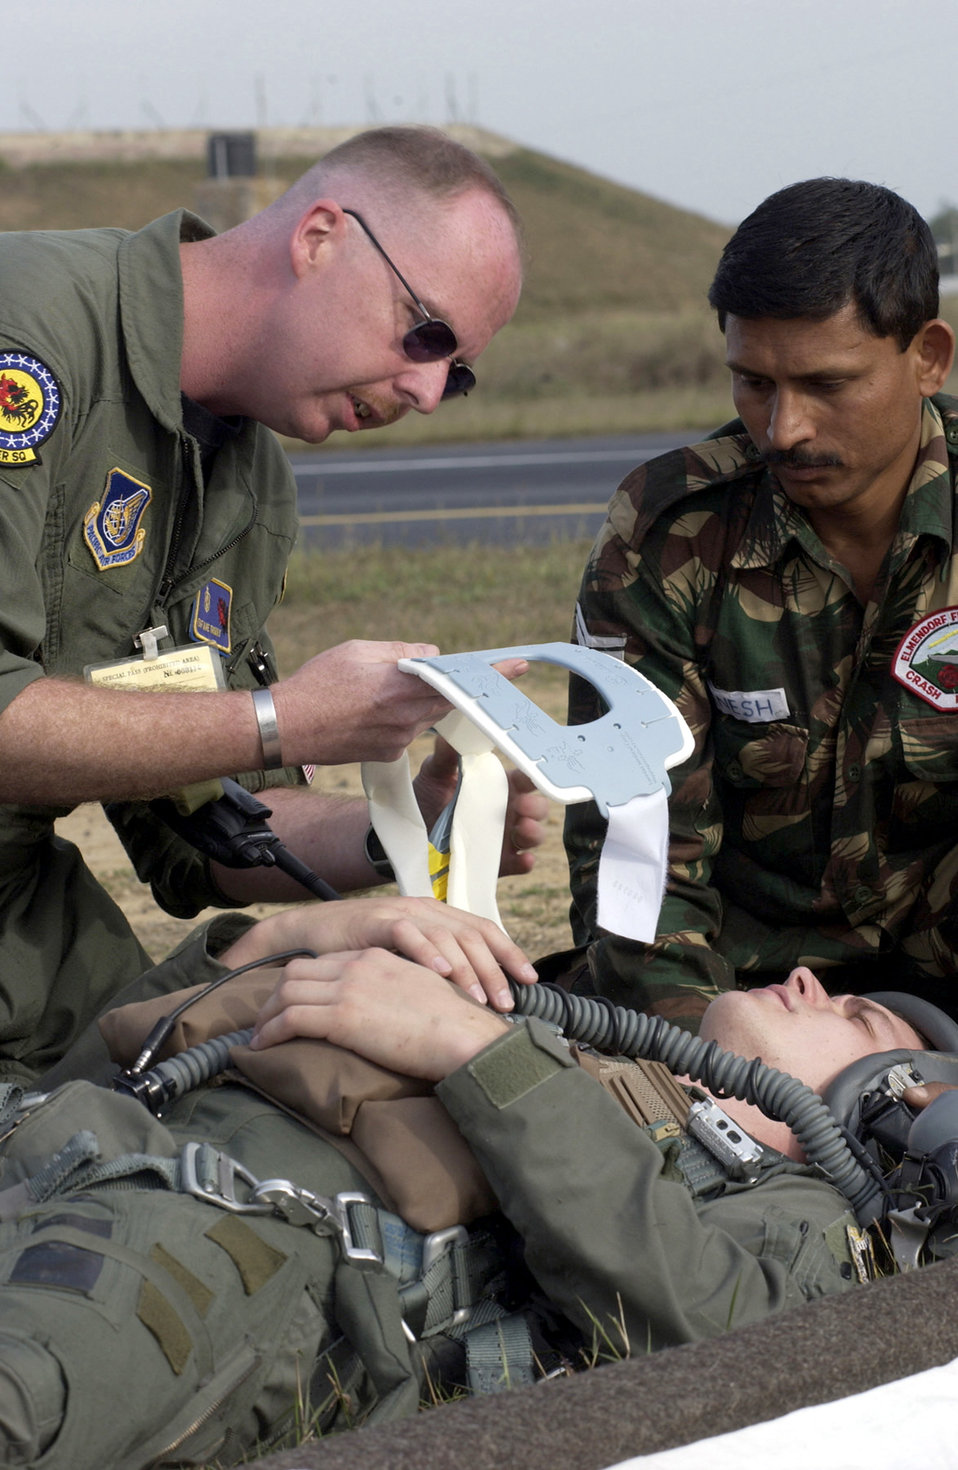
Cope India in full force

GWALIOR AIR FORCE STATION, India -- Tech. Sgt. Dave Thomas (left), a medical technician, treats F-15 Eagle pilot Capt. Dave Skalicky as Indian air force Sgt. G. Singh assists during a downed-pilot exercise here Feb. 24. Both U.S. airmen are from Elmendorf Air Force Base, Alaska, participating in Cope India '04, the first dissimilar air combat training exercise between the two air forces in more than 40 years. The 10-day exercise ended Feb. 25.